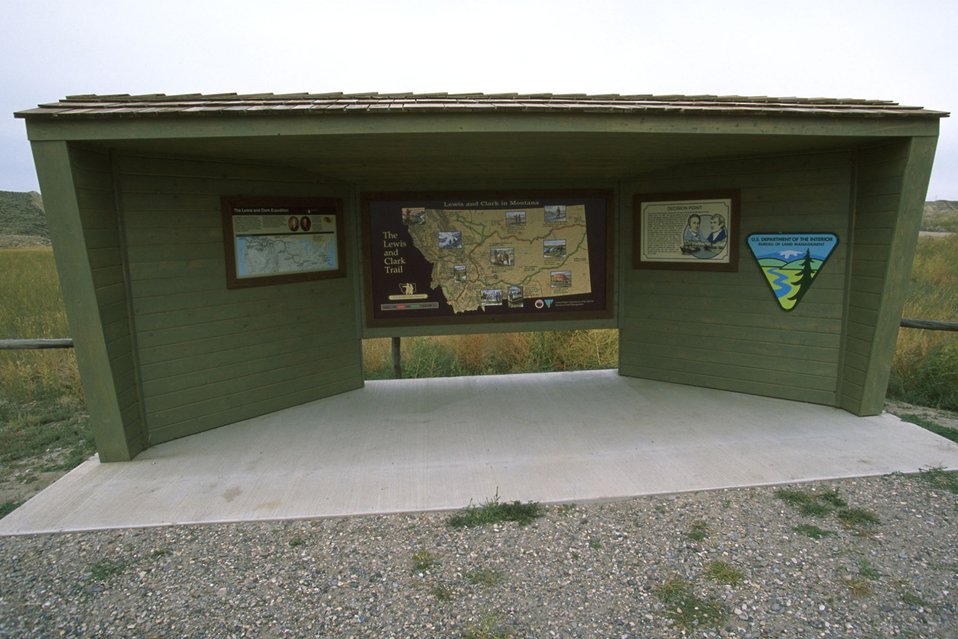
Interpretive kiosk at Decision Point, the confluence of the Marias and Missouri Rivers